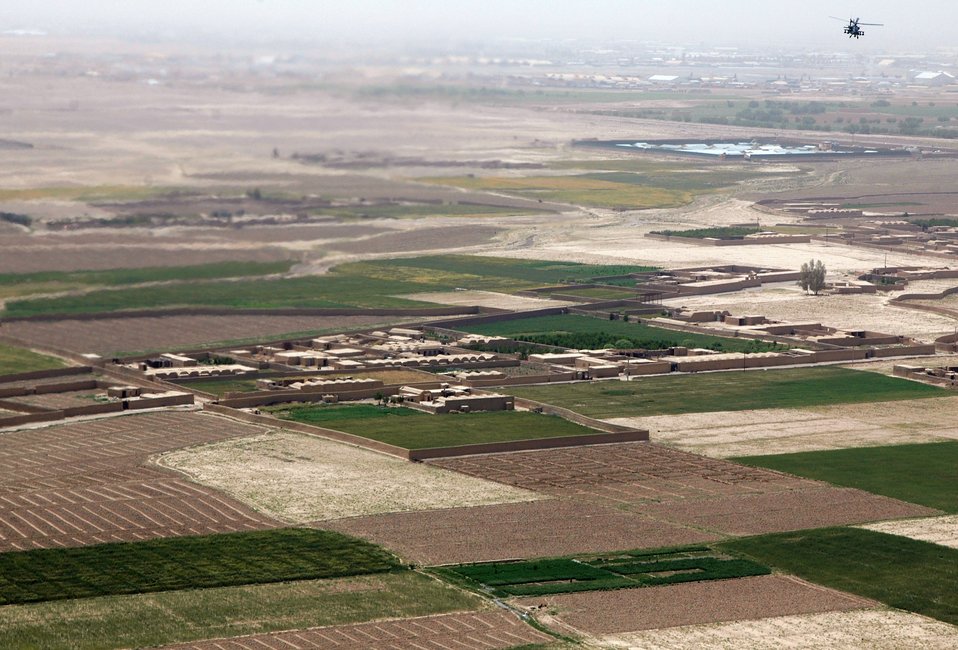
CODEL Berman